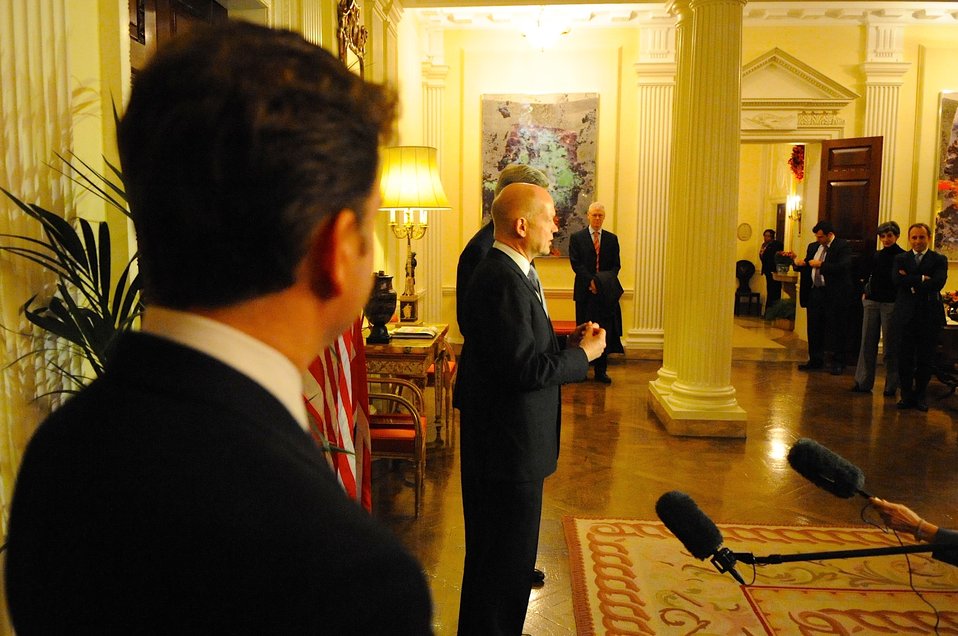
Secretary Kerry, UK Foreign Secretary Hague Address Reporters in London

U.S. Ambassador to the United Kingdom Matthew Barzun watches as U.S. Secretary of State John Kerry and British Foreign Secretary William Hague address reporters at Winfield House, the ambassador's official residence, in London, United Kingdom, on November 24, 2013.